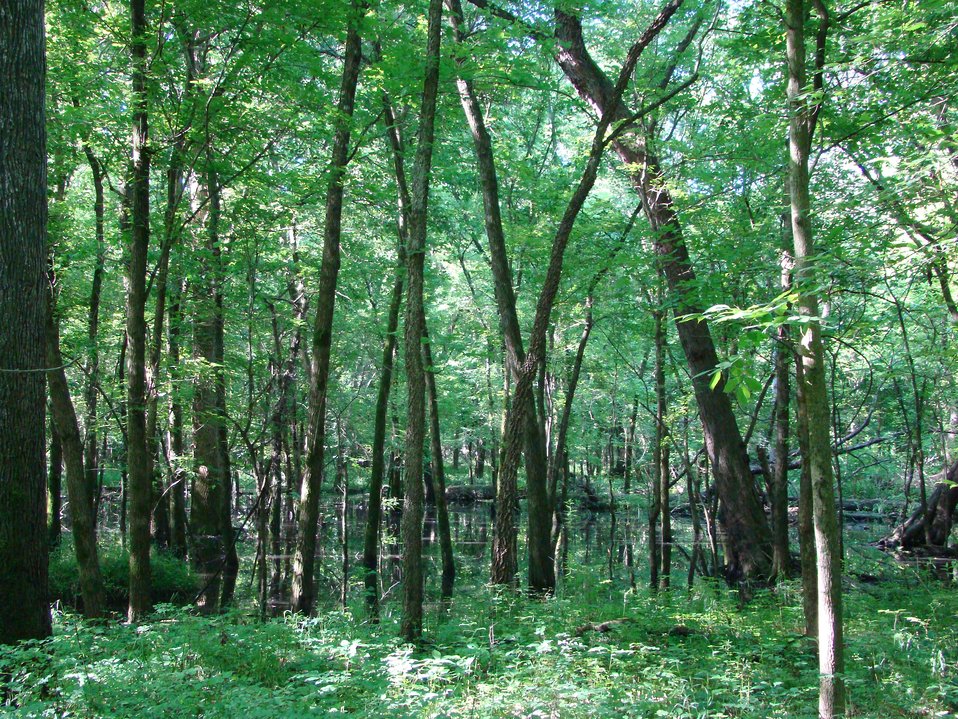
Marais des Cygnes National Wildlife Refuge in Kansas.